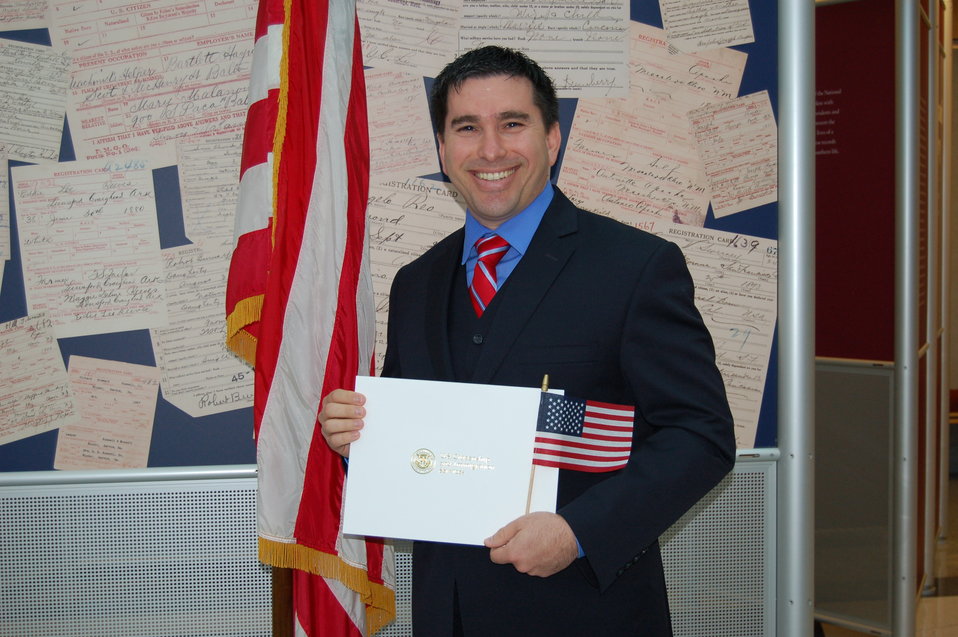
New Citizens